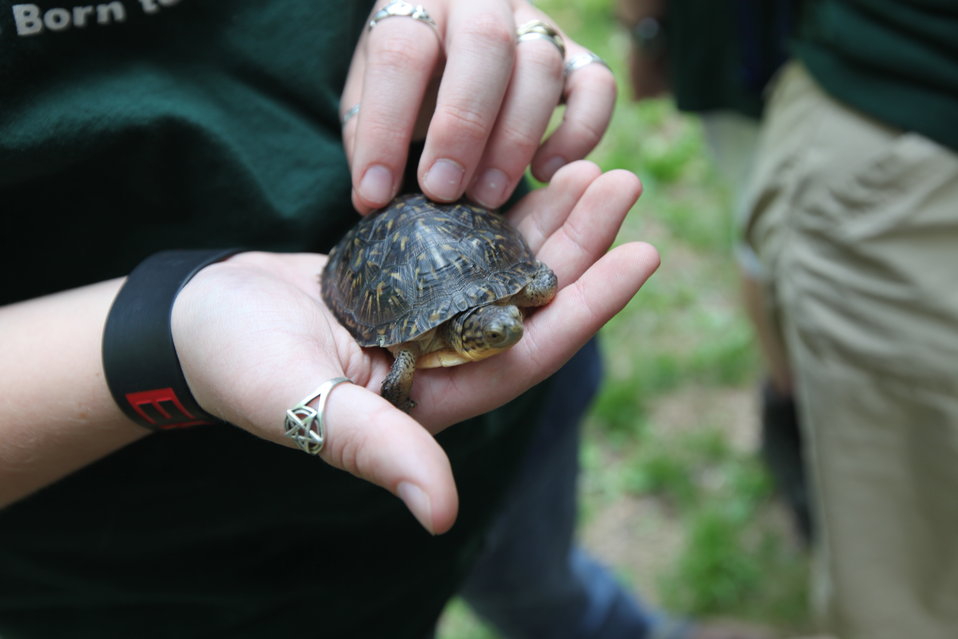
Blanding's Turtle

Blanding't turtle release, Assabet River, MA.